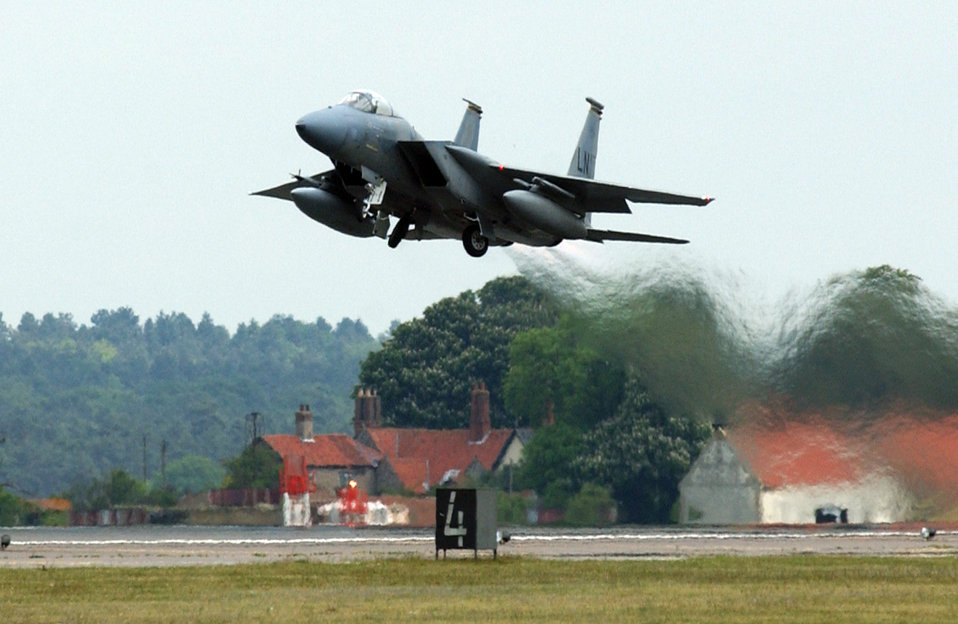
Eagle power

ROYAL AIR FORCE FAIRFORD, England -- An F-15C Eagle takes to the sky for a training sortie here May 20. The F-15 is assigned to the 493rd Fighter Squadron at Royal Air Force Lakenheath, England.